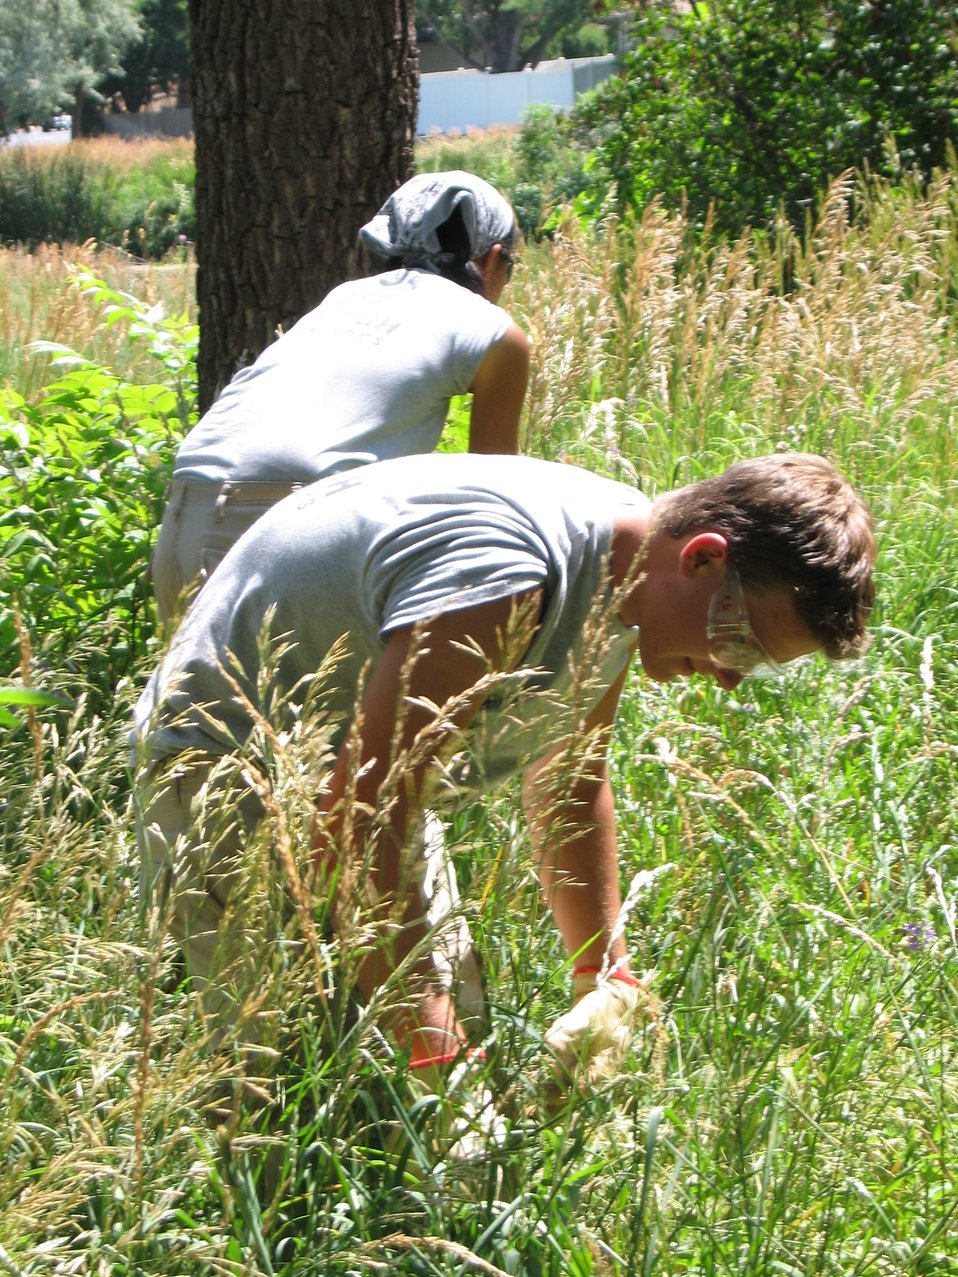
MHYC